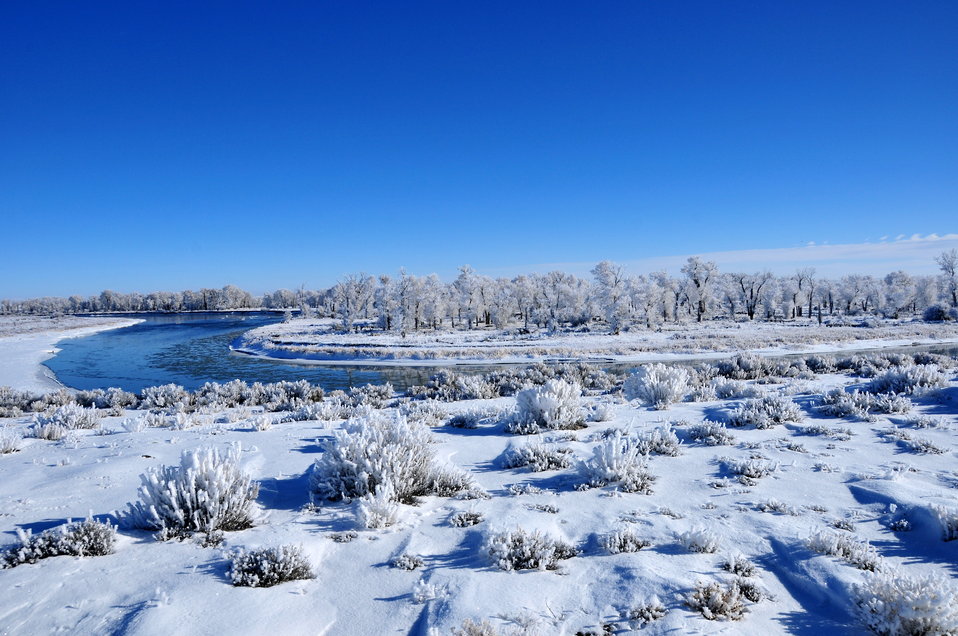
Green River on Seedskadee NWR in Winter

The Green River on Seedskadee NWR in winter after a fresh snow.